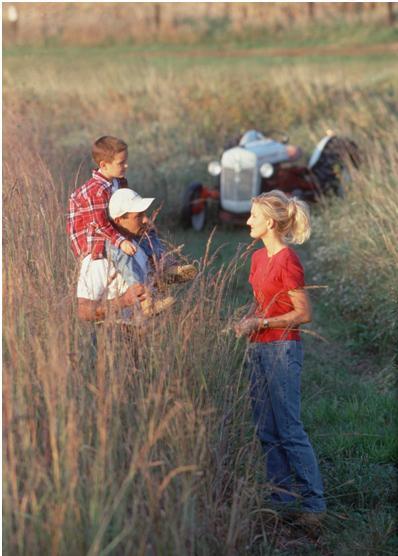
scitues831

A family stands in a plot of tall grass plantings on a farm in central Iowa.